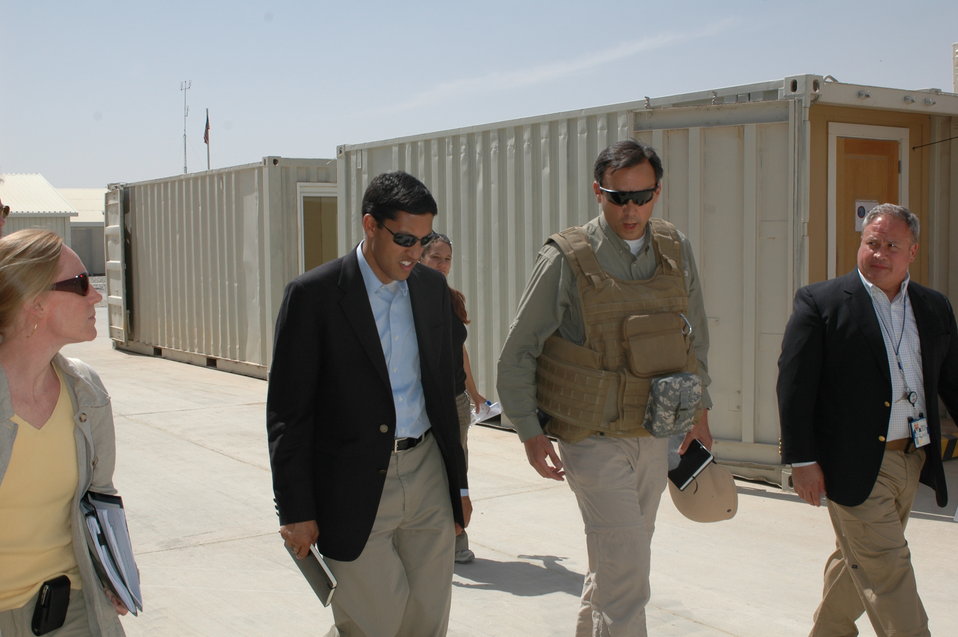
Dr Shah Visits Kandahar April 9, 2010